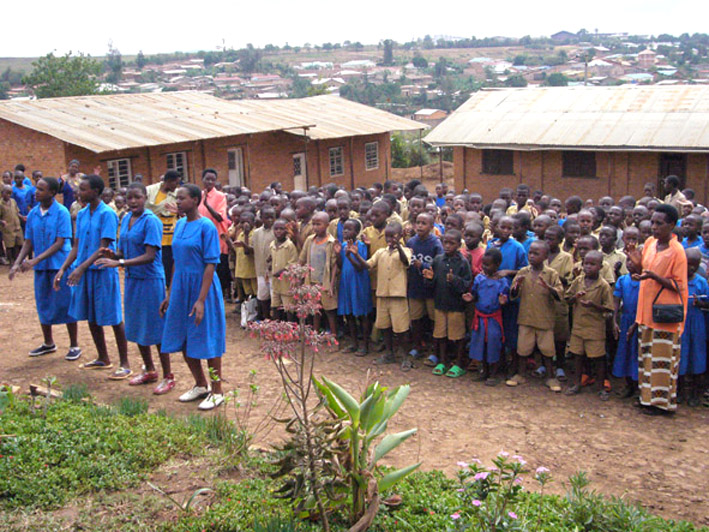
Ramstein Airmen connect with Rwandan children

Students sing in their native Kinya-rwanda to thank Airmen for donations at their school in Kigali, Rwanda. The Airmen are from Ramstein Air Base, Germany.